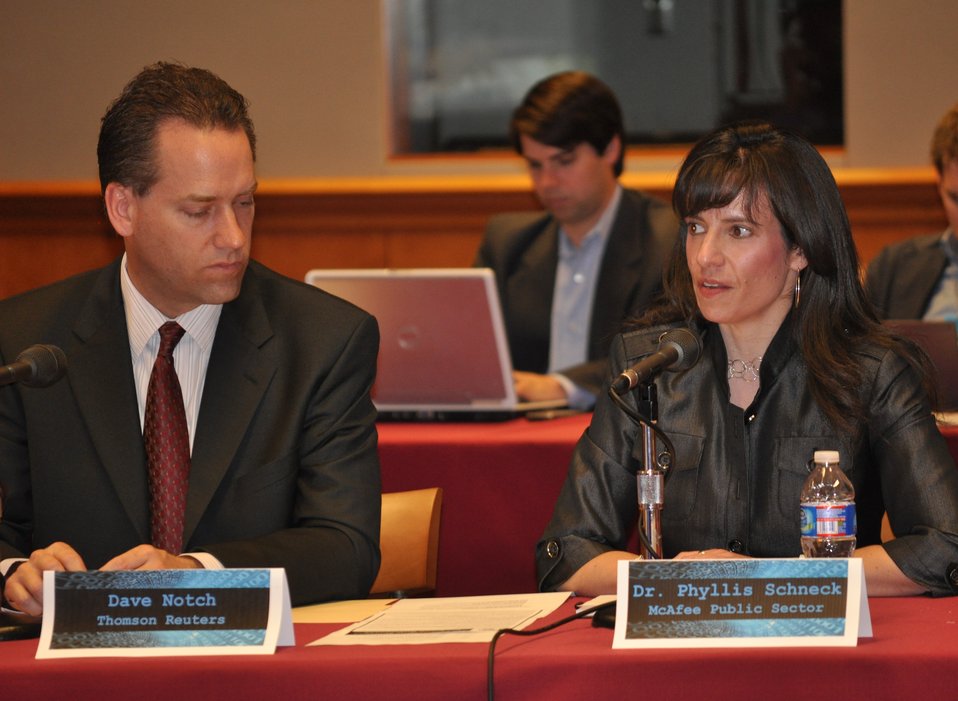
Cybersecurity 5-16

Cybersecurity for Small Business Roundtable; May 16, 2011